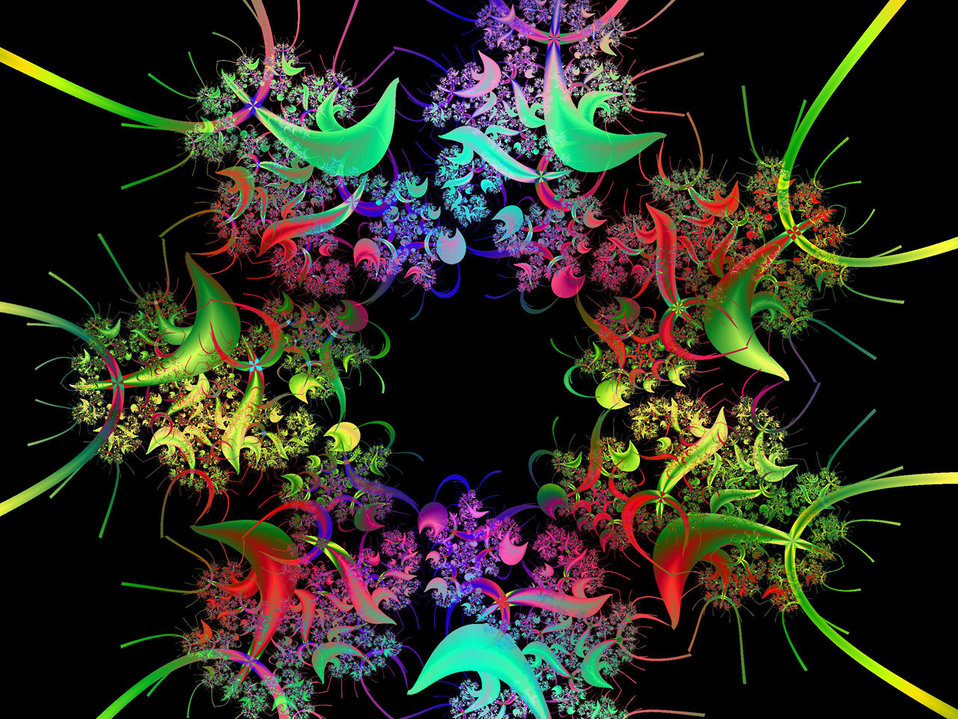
Another colourful fractal from circles.